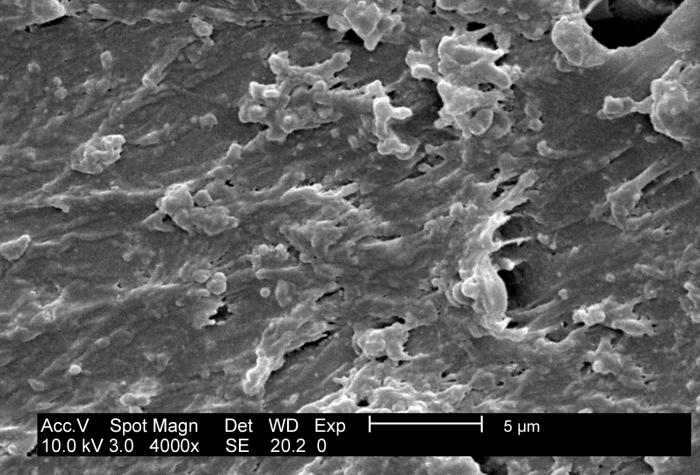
This SEM depicts an E. coli (ATCC 11775) biofilm grown on PC (polycarbonate) coupons using a CDC biofilm reactor.